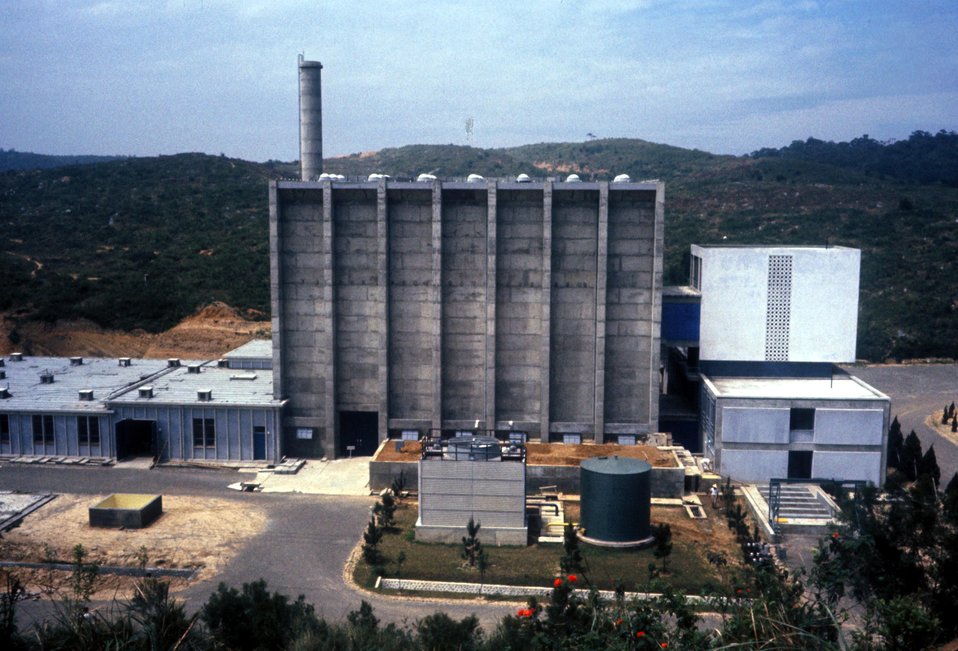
Side view, outside the reactor body, Chinese 1000kw Res. Reactor. Atoms for Peace Reactor -- GE. c. 1961